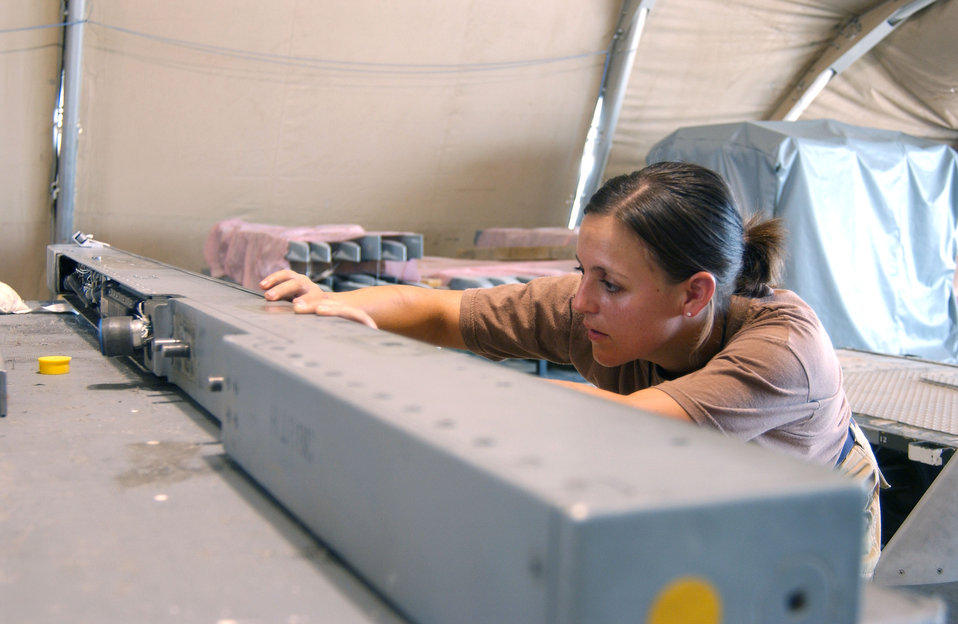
Flight arms the fight

Senior Airman Jean Jackson repairs a wing rail from an F-16 Fighting Falcon at Balad Air Base, Iraq. The 332nd Expeditionary Maintenance Squadron Armament Flight is responsible for the maintenance of the system on which the F-16 carries its weapons.